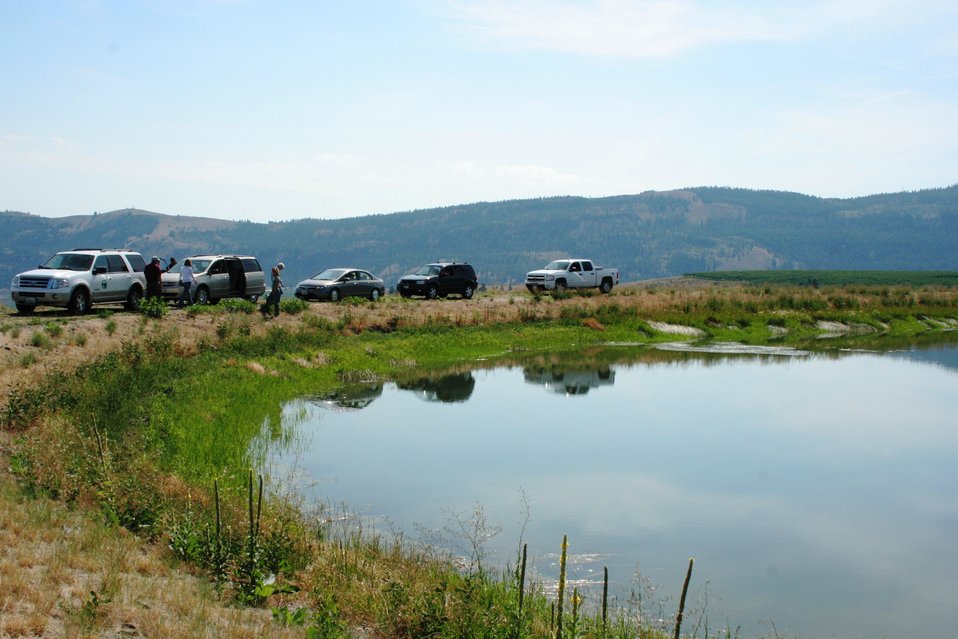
On the Road with Mike Taylor

FDA Deputy Commissioner Michael Taylor (left) and colleagues started a five-day tour of the Pacific Northwest on Sunday, Aug. 11, 2013 -- visiting Idaho, Oregon and Washington -- to get a first-hand look at produce production and irrigation operations, and to discuss the proposed Produce Safety Rule with growers, food industry representatives and state officials. Here Mike and colleagues are touring an irrigation canal. For more about Mike's multi-region tour, read these FDA Voice blog posts:

• Hearing the Concerns of Maine Growers Striving for Agricultural Diversity
• On the Road with Mike Taylor: Touring the Pacific Northwest
• On the Road with Mike Taylor, Day 2: Frank Talk in Farm Country
• On the Road with Mike Taylor, Day 3: Families and Partnerships
• On the Road with Mike Taylor, Day 4: Looking to the Future